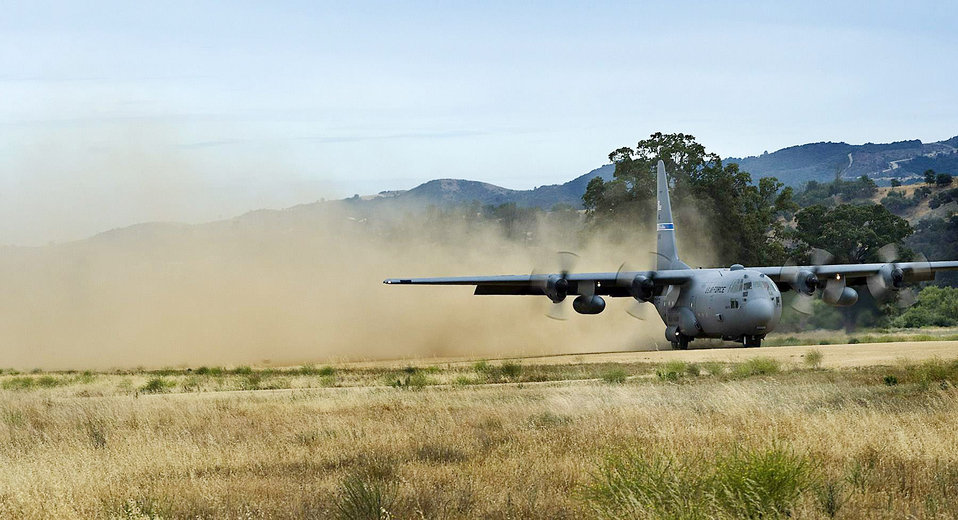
Hydra Exercise 2009

A C-130 Hercules lands on a dirt landing strip on Schoonover Landing Zone at Fort Hunter-Ligget, Calif. during the Hydra Exercise 2009. Hydra is a training exercise developed to provide a West Coast venue to train the 615 Contingency Response Wing's unique mission capabilities such as, command and control, aerial port, maintenance and air mobility liaison duties in a joint environment.